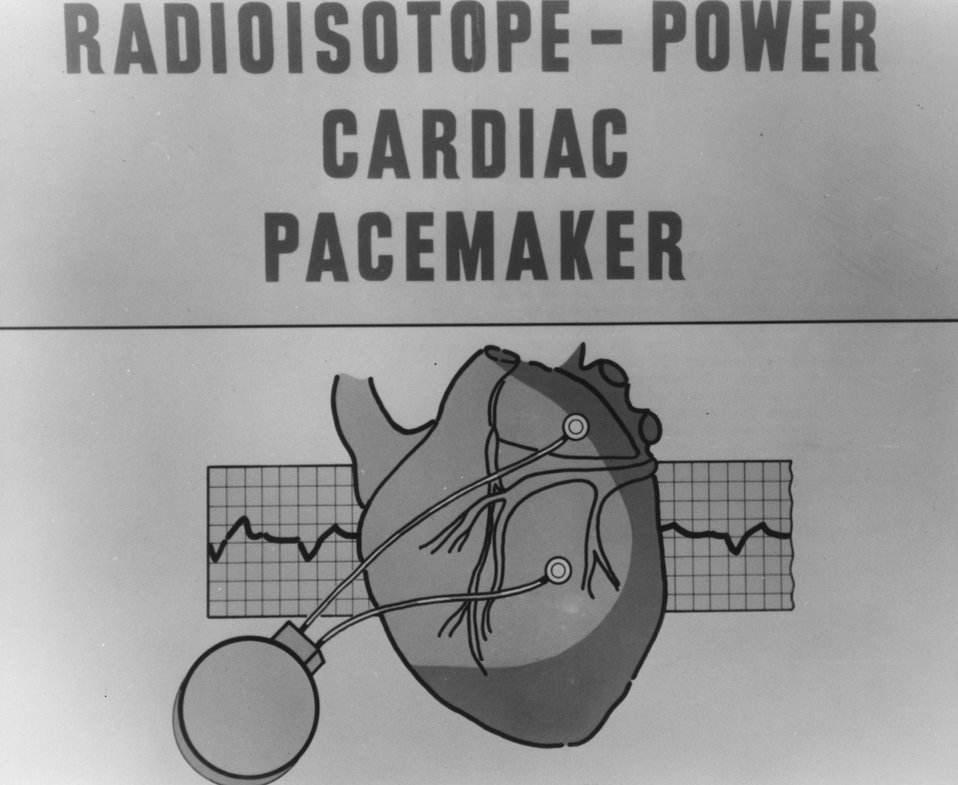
This radioisotope-powered cardiac pacemakerm being developed by the Atomic Energy Commission, is planned to stimulate the pulsing action of a malfunctioning heart. Circa 1967.